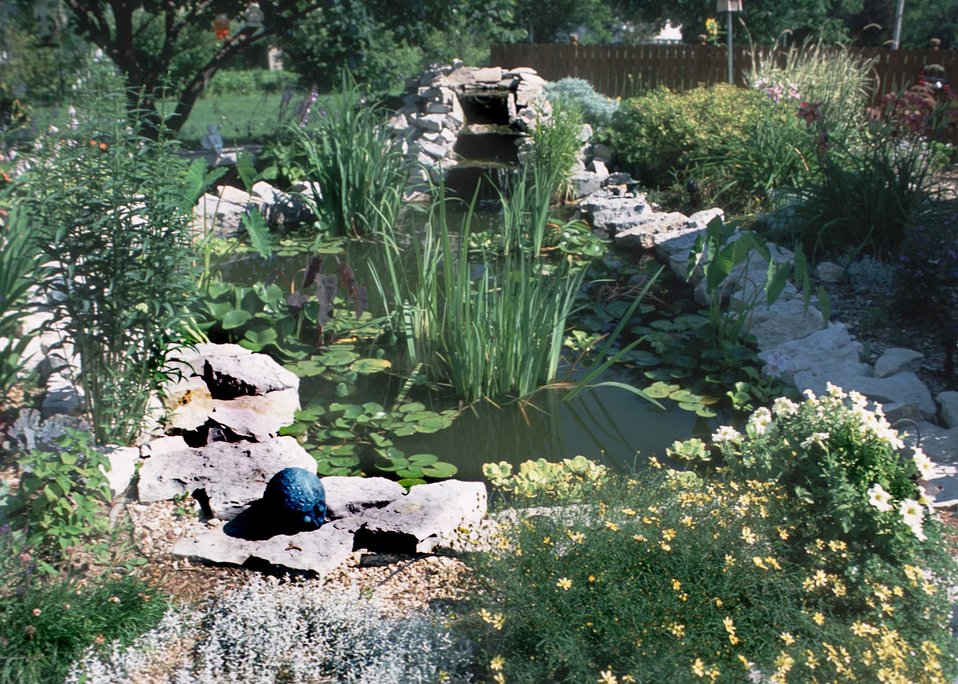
A variety of plants and a pond with circulating water are featured in a backyard in Keosauqua, Iowa.